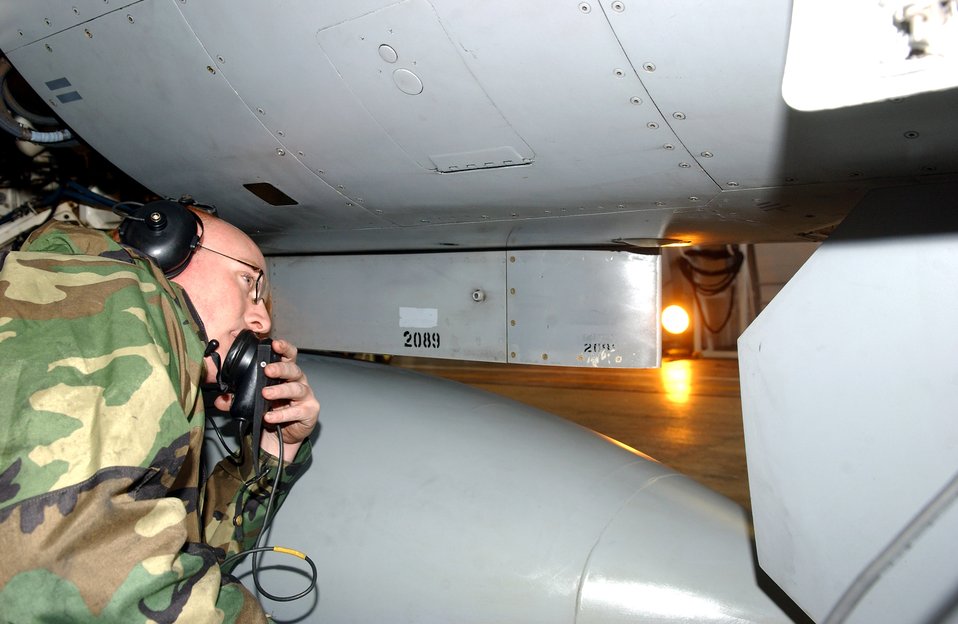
Pilots focus on air superiority, operations during Keen Sword

Crew Chief Staff Sgt. Patrick Etherson inspects an F-16 Fighting Falcon prior to take-off Nov. 14 during Exercise Keen Sword at Misawa Air Base, Japan. More than 60 military units from 24 locations participated in the exercise designed to improve interoperability between the Japanese Air Self Defense Force and U.S. forces. Sergeant Etherson is with the 35th Aircraft maintenance Squadron.